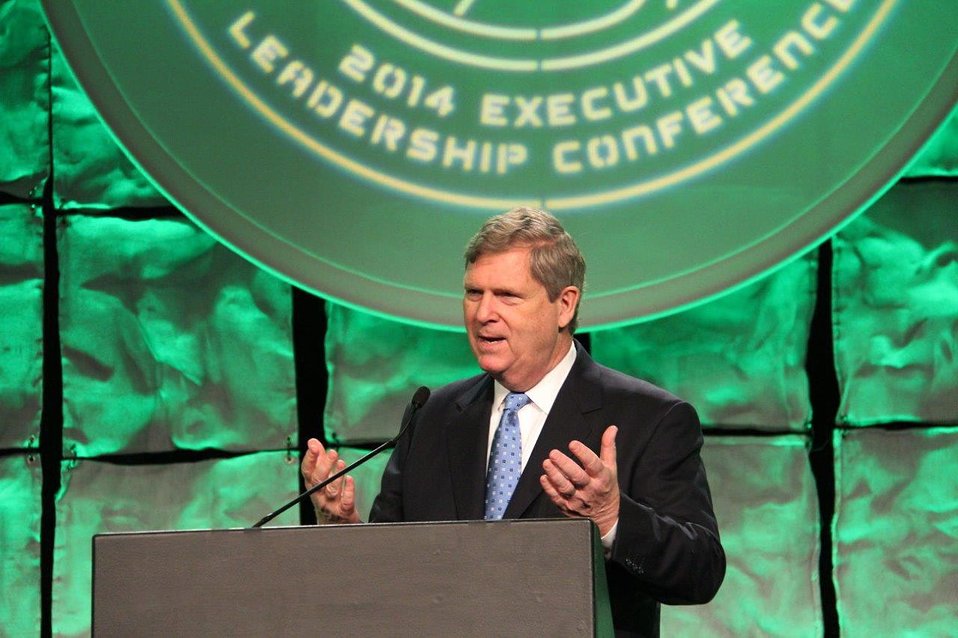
Agriculture Secretary Tom Vilsack speaks at the fifth annual executive leadership conference 'Taking it to the Streets' at the JW Marriott Desert Ridge Hotel in Phoenix, AZ on Feb. 27, 2014.